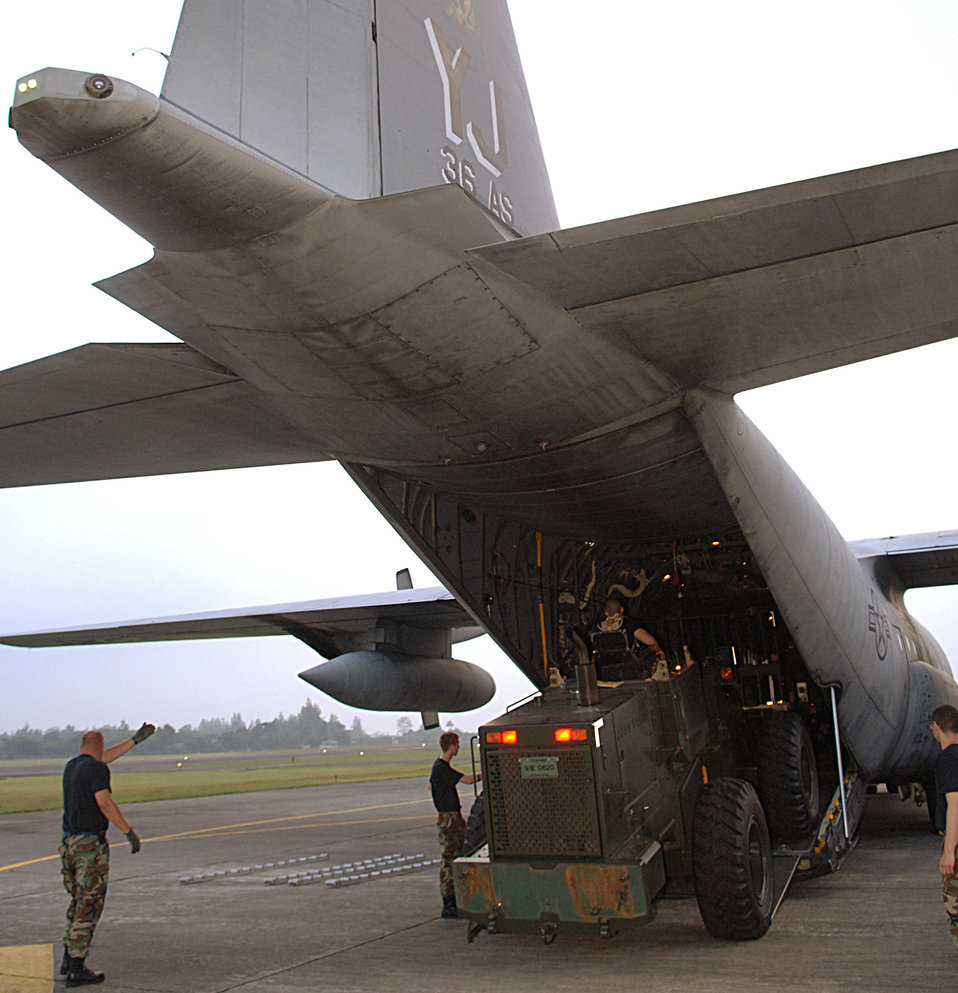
Earthquake relief

Airmen from the 36th Airlift Squadron and Combat Mobility Element at Yokota Air Base, Japan, unload supplies and equipment at Yogyakarta, Indonesia, on Thursday, June 1, 2006. The C-130 Hercules mission brought humanitarian relief aid to Indonesia, after an earthquake claimed the lives of more than 6,200 people and injured thousands more.